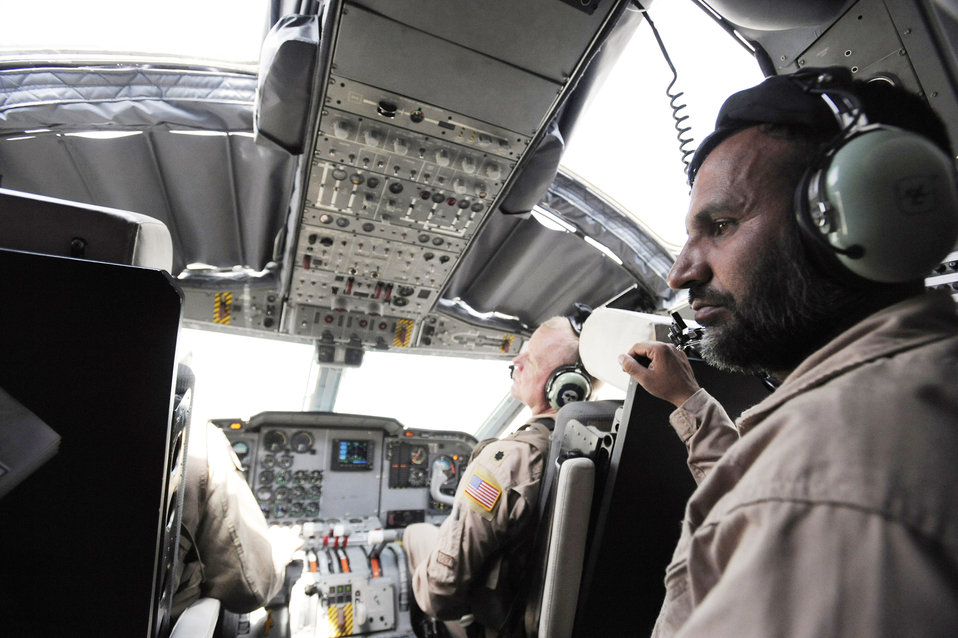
Airmen train Afghan C-27 loadmaster

Afghanistan National Army Air Corps Master Sgt. Sheer Aqa Karimi listens to the pilots while performing loadmaster duties for Brig. Gen. Michael Boera (left) and Lt. Col. Chris Kampsen prior to taking off for an operational mission and C-27 Spartan loadmaster check ride March 28, 2010, at Camp Bastion, Afghanistan. During the flight, a loadmaster assists the pilot by running checklists and checking engine and hydraulic systems to ensure passengers and cargo arrive at their destination safely. Sergeant Karimi is a a C-27 loadmaster. General Boera is the 438th Air Expeditionary Wing and Combined Air Power Transition Force commander, and Colonel Kampsen is the director of operations for the 538th Air Expeditionary Advisory Squadron and a C-27 instructor.